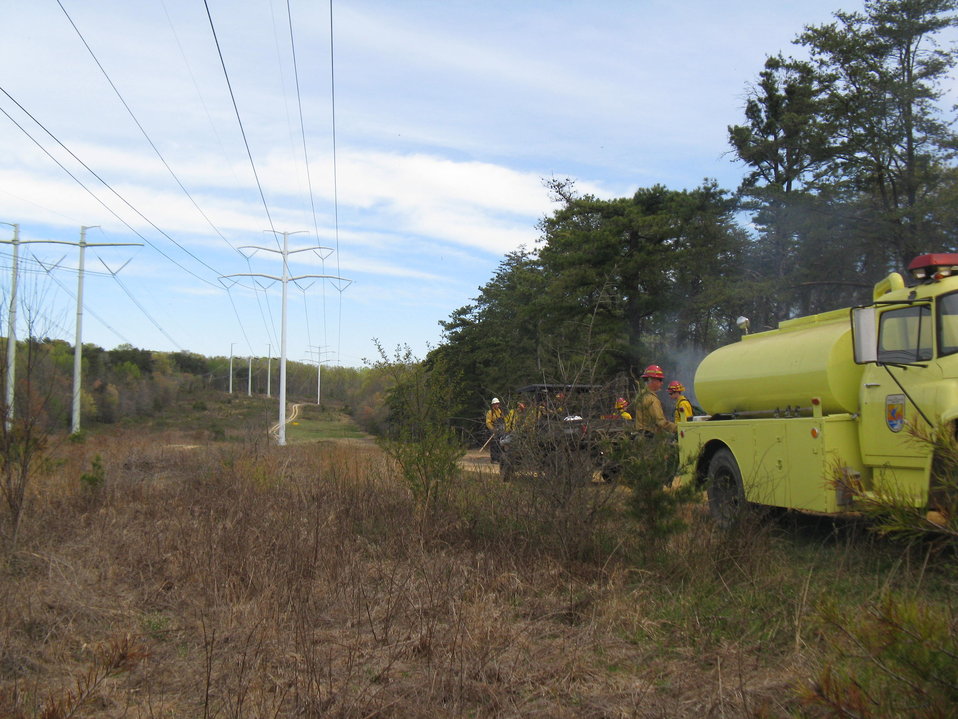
Powerline Protection

Laurel, Maryland, April 5, 2012: Patuxent Research Refuge's water tender and fire crews flank the western boundary of a controlled burn. Burn conditions were chosen to blow smoke away from powerlines. The burn was done at Patuxent Research Refuge's Savannah Restoration Unit to increase refuge species and habitat diversity. Specifically, the refuge hoped to increase density and diversity of rare darkling beetles and forest floor plants.